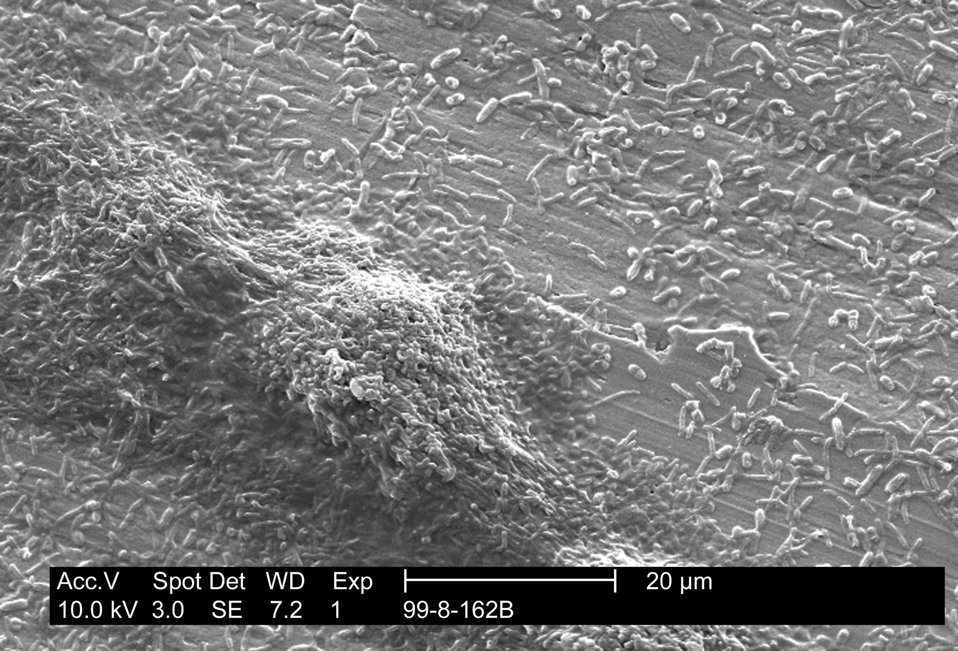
Scanning electron micrograph of a laboratory-grown potable water biofilm.